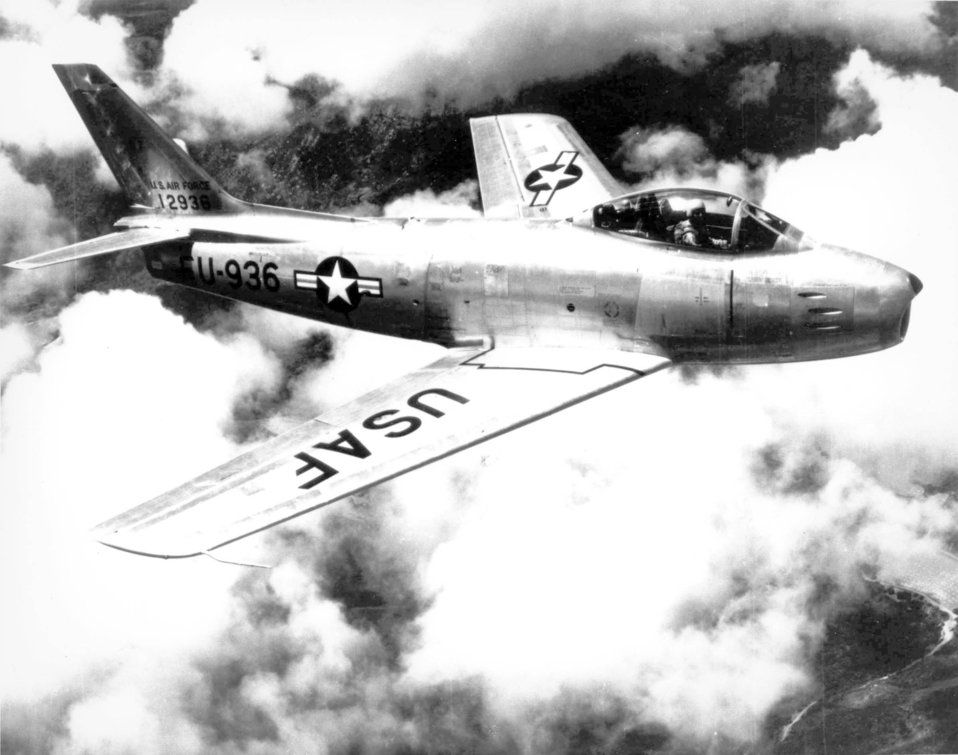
F-86

1940's -- NORTH AMERICAN F-86